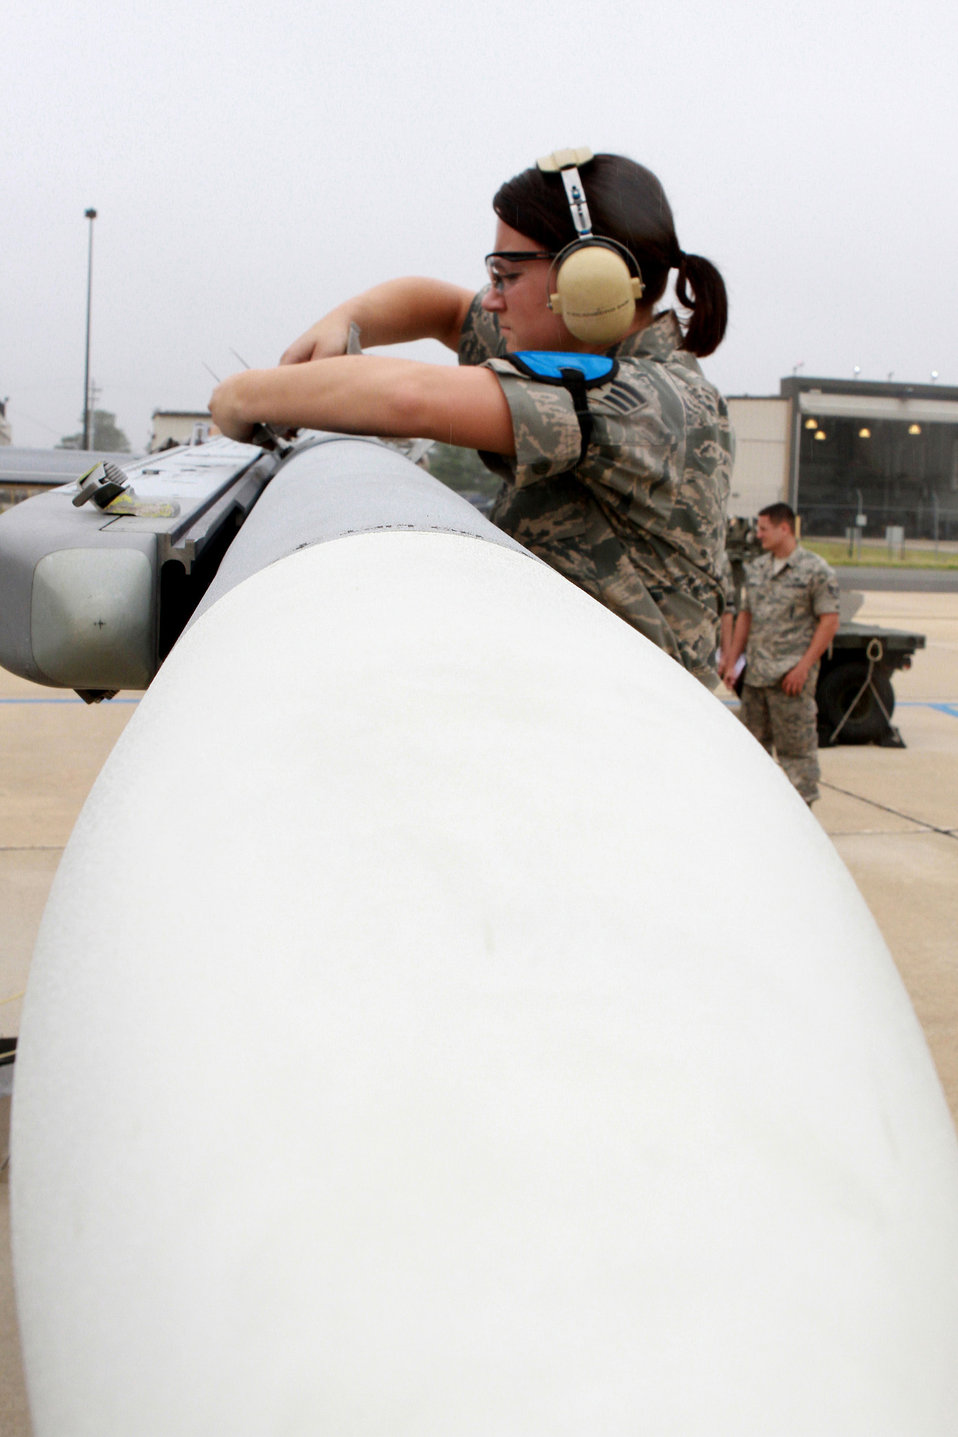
Weapons-loader competition

Senior Airman Kelly Eilenberg installs a fin on an advanced medium-range air-to-air missile June 12, 2011, during an annual load-crew competition at Egg Harbor Township, N.J. Airman Eilenberg is a weapons loader assigned to the New Jersey Air National Guard's 177th Fighter Wing.